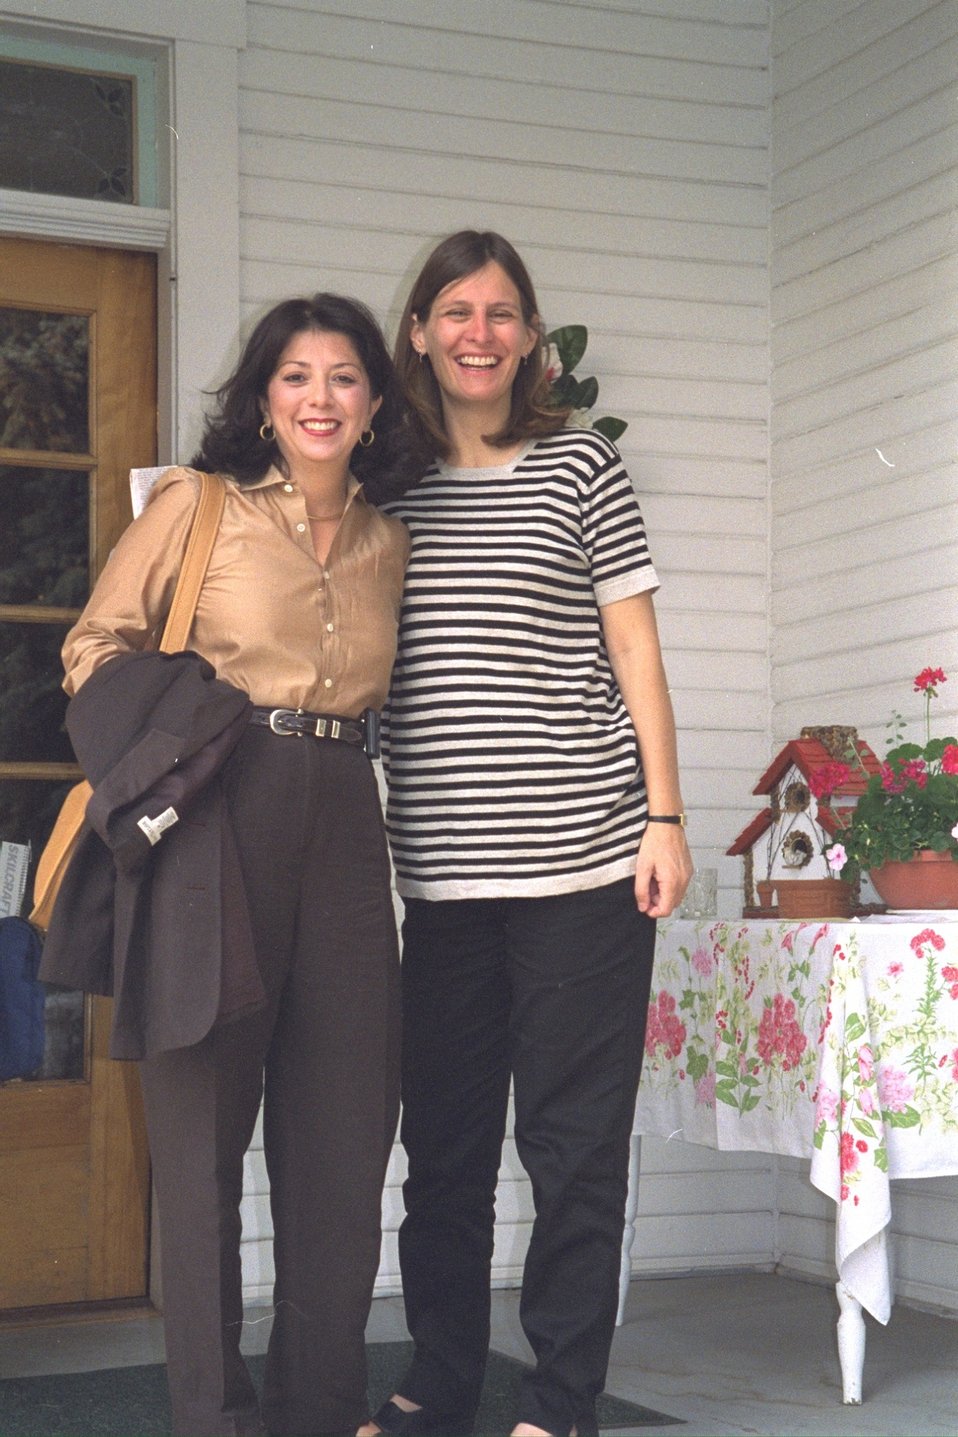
Sylvia Baca and Molly McUsic at Sage Country Inn meeting place.